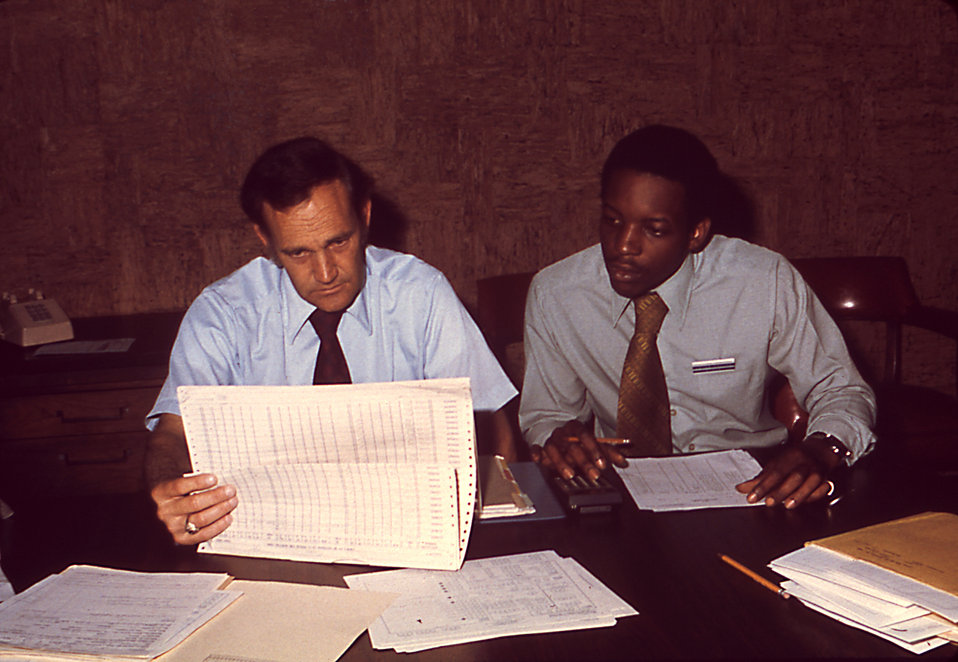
Two CDC staff members are collecting data at Doctor's Hospital, Tucker, Georgia, 1977.